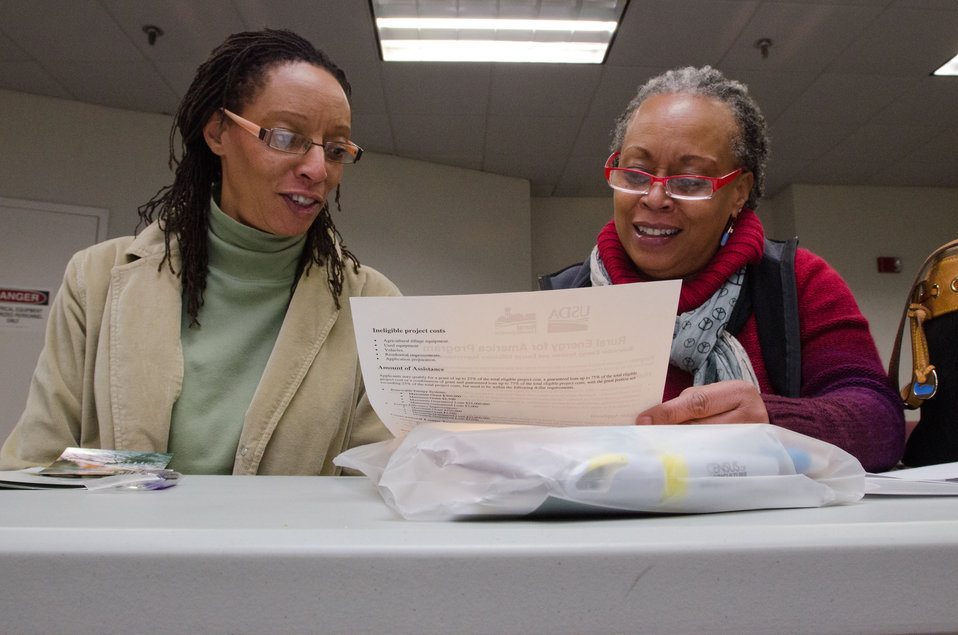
Two farmers familiarized themselves with a Rural Energy for America Program (REAP) application form, after the 'ABC's fo Applying for USDA Programs and Services' session, during the “Virginia State University (VSU), U.S. Department of Agriculture (USDA) and Virginia Farmers Working Together” outreach workshop in the VSU, L. Douglas Wilder building on Thursday, March 7, 2013, in Petersburg, VA. Farmers shared and learned new ways to do more with their current assets and capabilities to grow their businesses.